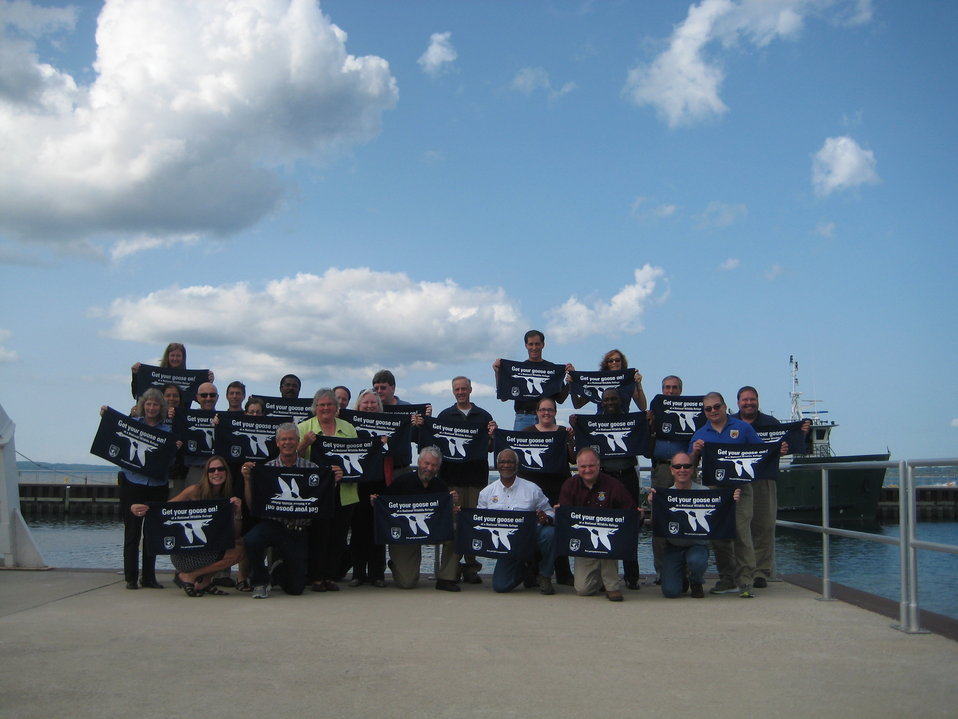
USFWS Leaders Get Their Goose On!

Taken during the Summer 2012 Directorate Meeting.